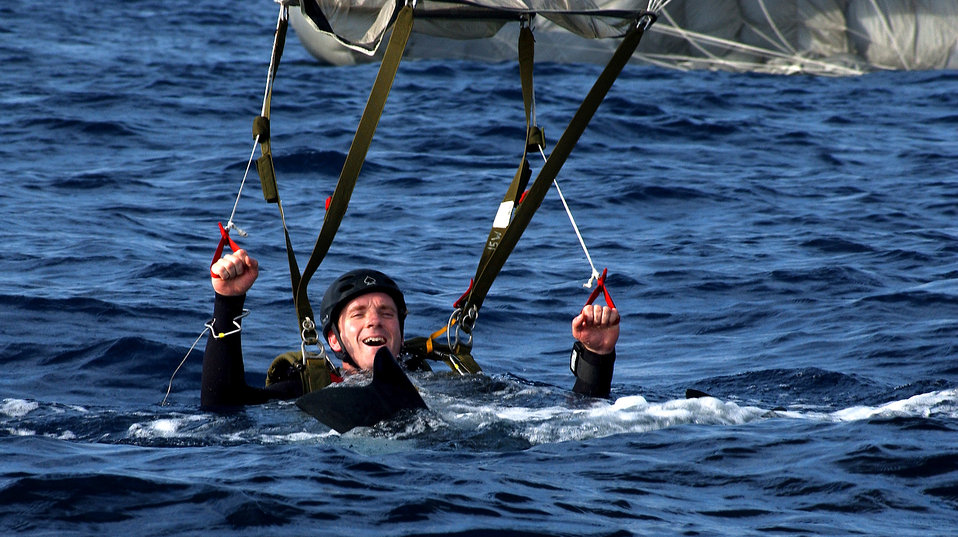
Combat Rescue

Staff Sergeant Chris Harding, 31st Rescue Squadron, Kadena Air Base, Japan, glides into the warm, blue waters of Okinawa during a weekly training exercise Jan. 16, at the White Beach Naval facility.